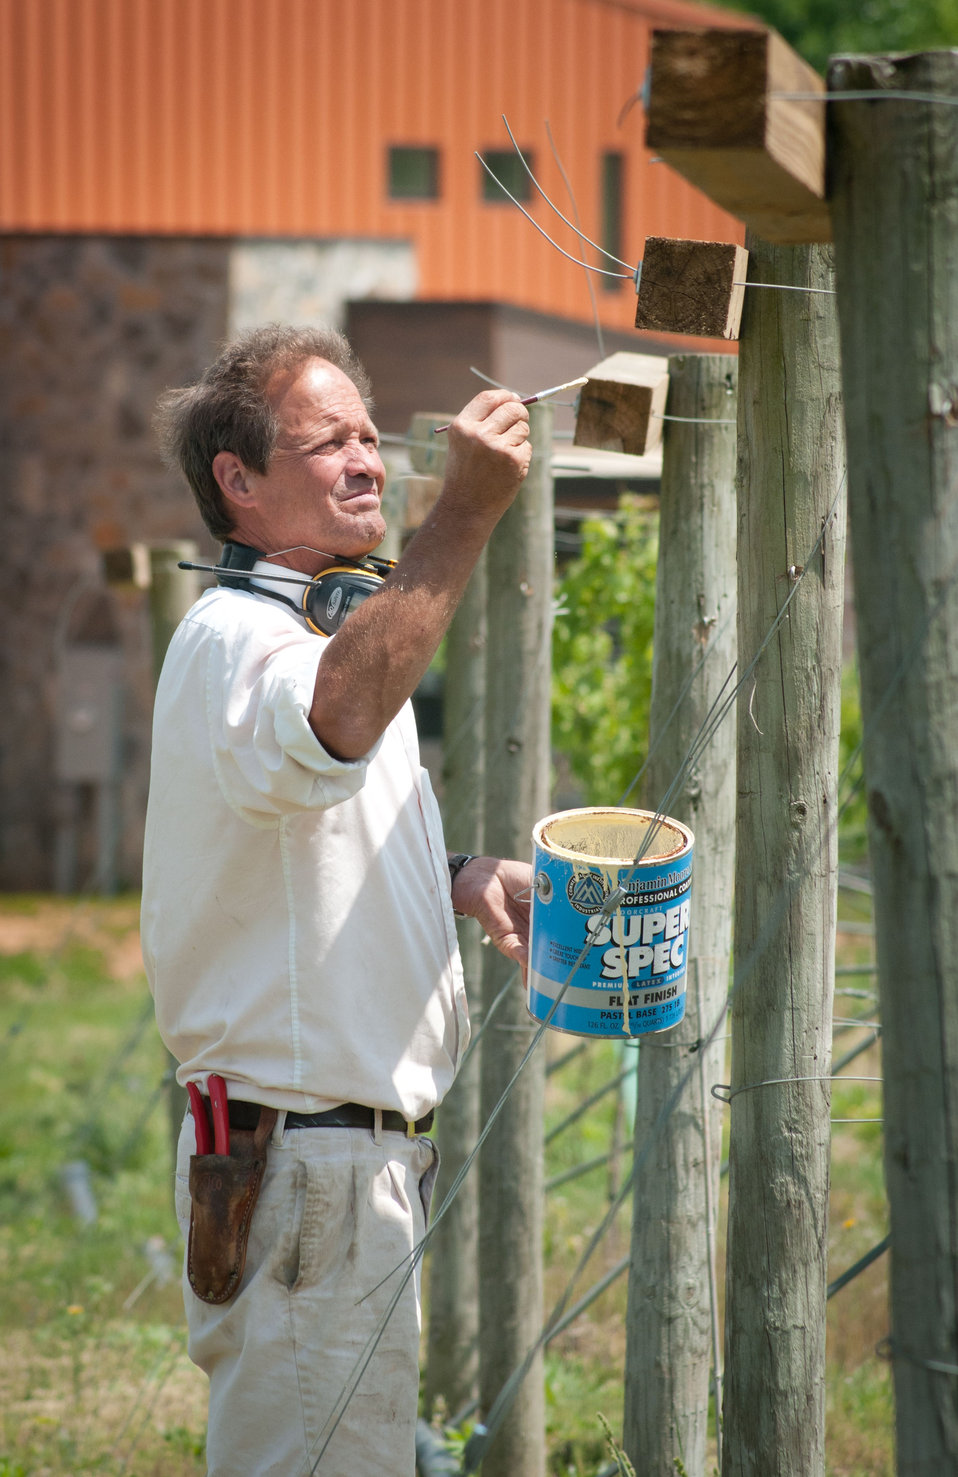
Cooper Vineyards vineyard manager Michael Boone applies identification markings to the rows of grape vines in Louisa, VA, on May 4, 2011, the first winery on the East Coast and the second in the country to be awarded the fourth and highest, Platinum certification by Leadership in Energy and Environmental Design (LEED).
From a Virginia Wine Board Marketing Office press release, “The process of building a LEED platinum certified building was initially more expensive and arduous than co-owners, Jacque Hogge, MD and Geoffrey Cooper, MD expected, but they were able to get financial assistance from the United States Department of Agriculture. “Know that there are grants available to help with the costs of sustainable building projects,” Hogge advises to other potential green wineries. Cooper Vineyards received 2 of the 3 USDA (U.S. Department of Agriculture Rural Development (RD) Rural Energy Financing program) grants awarded in Virginia in 2010 to help with the expenses of their construction.”
Rural Energy Financing program focuses on loan guarantees, loans and grants to agricultural producers, businesses, cooperatives and rural residents for renewable energy systems and to make energy efficiency improvements.
The tasting room and building collects rainwater from the roof; uses low flow water fixtures to reduce usage by 40%; utilizes structurally insulated panels for the roof and walls; heats and cools the entire building using a geothermal system that includes pipes that are embedded in the parking lot; low-voltage LED lighting with daylight and occupancy sensors provide ample light when it is needed; a solar panel array provides more than 15% of the energy needs for the building, and much of the construction materials are from local and recycled material sources. For more information about USDA please go to www.usda.gov, Rural Development and Rural Energy Financing. LEED was developed by the U.S. Green Building Council (USGBC) is a 501 c3 non-profit organization committed to a prosperous and sustainable future for our nation through cost-efficient and energy-saving green buildings.